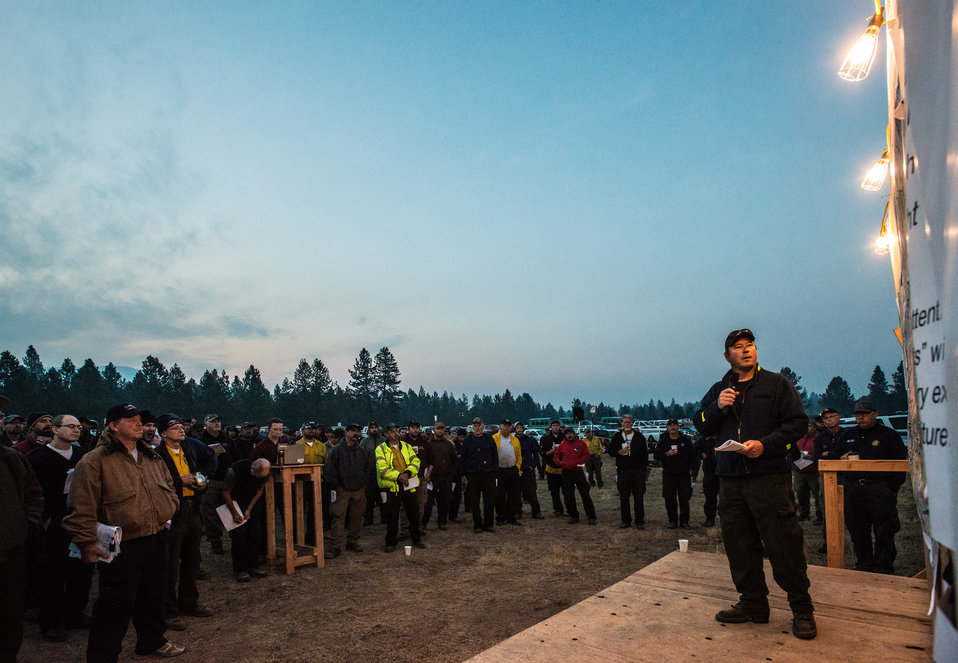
The Morning Briefing at the Big Windy Complex Wildlands Fire, Incident Command Post (ICP) in Merlin, OR on Friday, Aug 9, 2013. Several presenters taking turns, bringing people up to speed on the nights activates and what the objectives are for today. The fire center is approximately 15 miles west of Interstate-5 and East Northeast of Galice, Oregon.